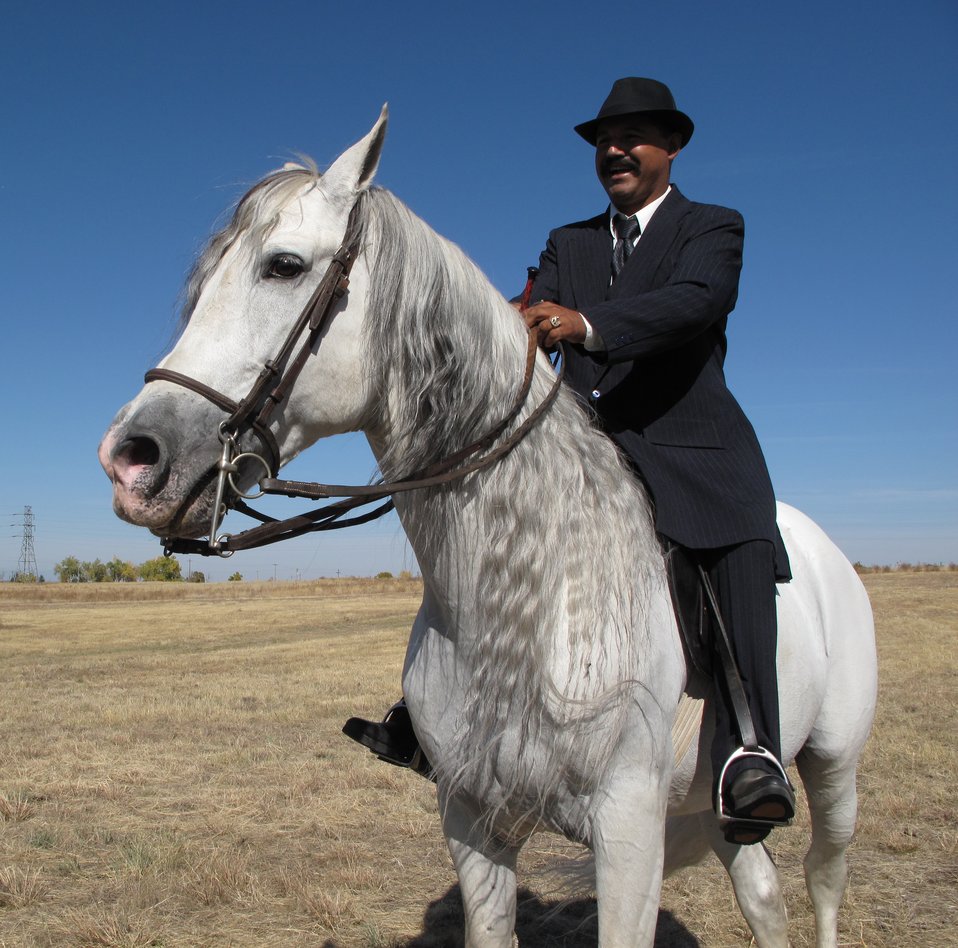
Horse

Jose and his dancing horses at the Rocky Mountain Arsenal Refuge Round-Up 2010.